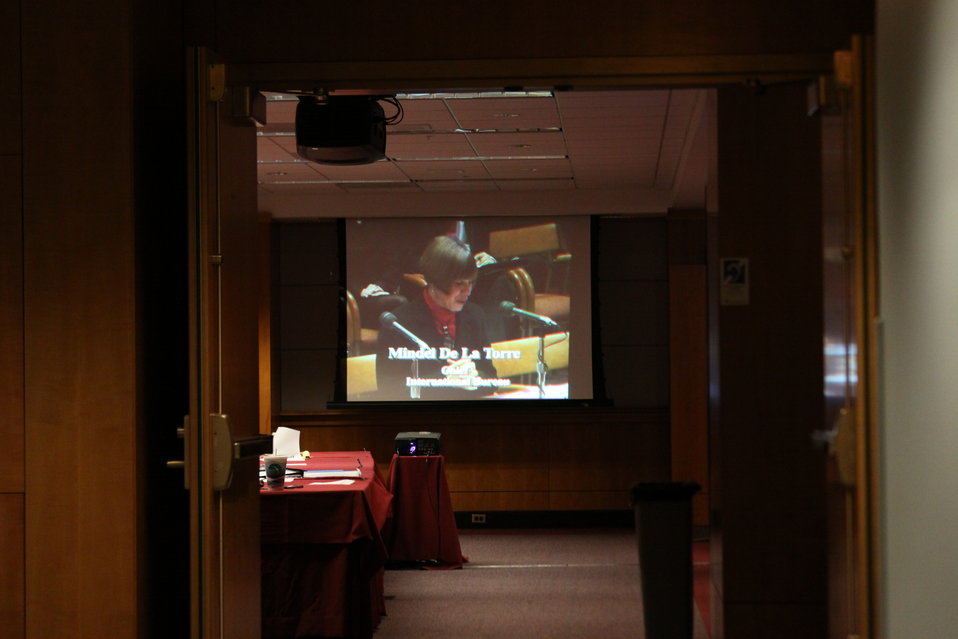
Open Commission Meeting - 2/18/2010

The Federal Communications Commission will hold an Open Meeting in Washington, DC. on February 18, 2010, which will include the following items:

E-Rate: An Order and Notice of Proposed Rulemaking to enable schools that receive funding from the E-Rate program to allow members of the general public to use the schools' Internet access during non-operating hours at no additional cost to the Universal Service Fund. This order and notice do not permit or require any changes to E-Rate applications due on February 11, 2010; Ex Parte Reform: A Notice of Proposed Rulemaking to improve the transparency and effectiveness of the FCC's decision-making process by reforming the ex parte rules; Procedural Reform: A Notice of Proposed Rulemaking to enhance the efficiency, openness, and transparency of the Commission's proceedings by improving and modernizing certain organizational and procedural rules; National Broadband Plan Status Report: Commission staff will report on the status of the National Broadband Plan, providing a framework for the national purposes portion of the Plan.